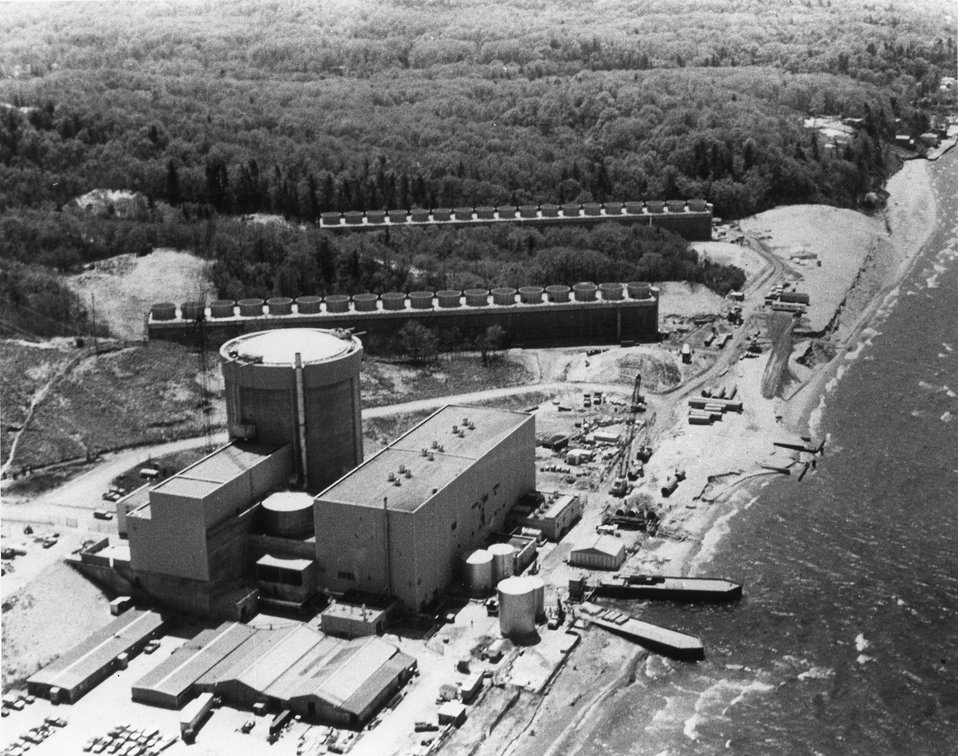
Aerial view of the Consumers Power Company of Michigan's Palisades Plant Unit 1. Circa 1974.